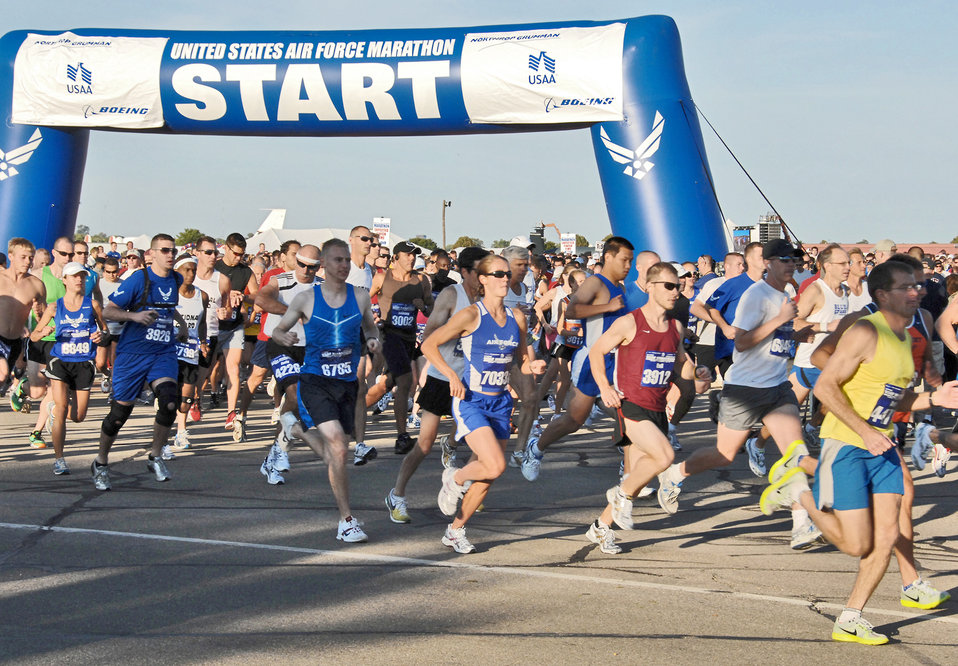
Air Force Marathon

More than 3,800 runners start the half marathon Sept. 19, 2009, at Wright-Patterson Air Force Base, Ohio. For the first time the Air Force Marathon is maxed out for the full and half marathon.